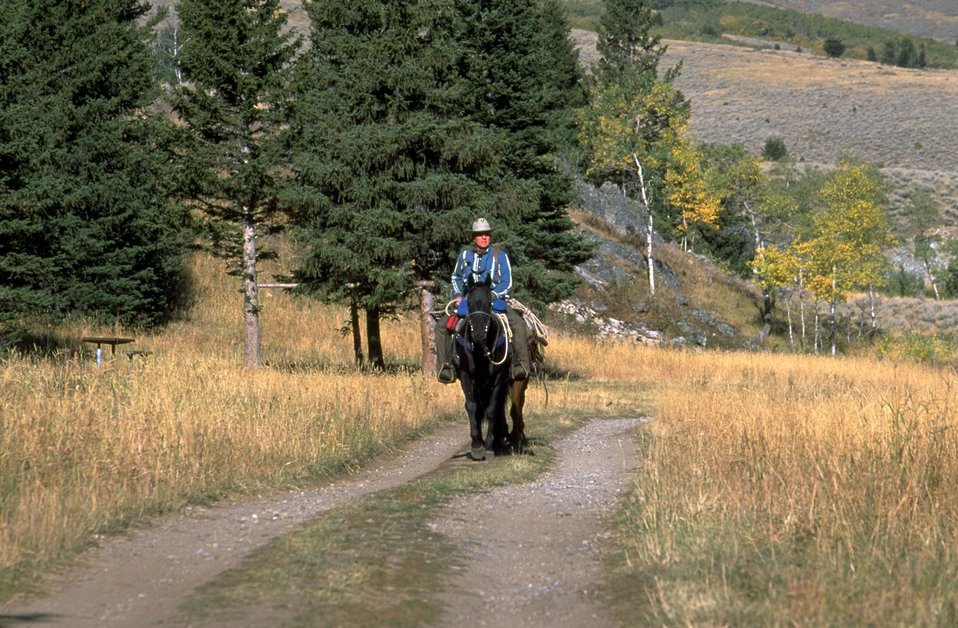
Horseback rider with pack string